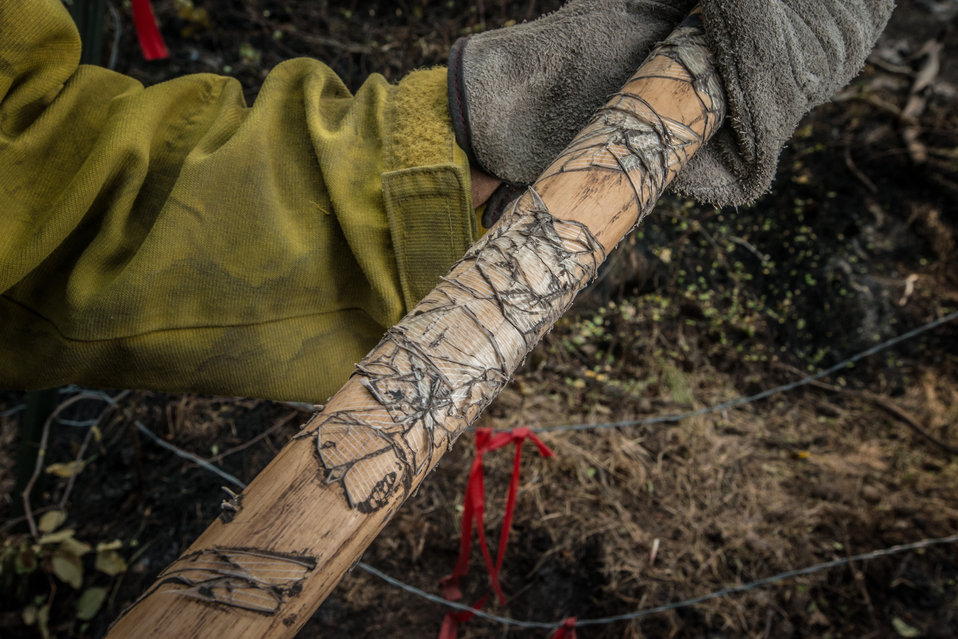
John Alexander Roebuck, Choctaw, Incident Commander Type 5, uses a complex application of tape on his Combi-tool to identify his from someone else's hand tool. The tool is part right-angle shovel and part pick that quickly loosens and drags fire fuels such as fallen wood debris to one side in the formation of a shallow trench line that will help break a fire's progression, during Beaver Creek Fire operations, near Hailey, ID, in the interface of U.S. Department of Agriculture (USDA) Forest Service (FS) and Sawtooth National Forest and Bureau of Land Management (BLM) lands, on Wednesday, Aug 21, 2013.